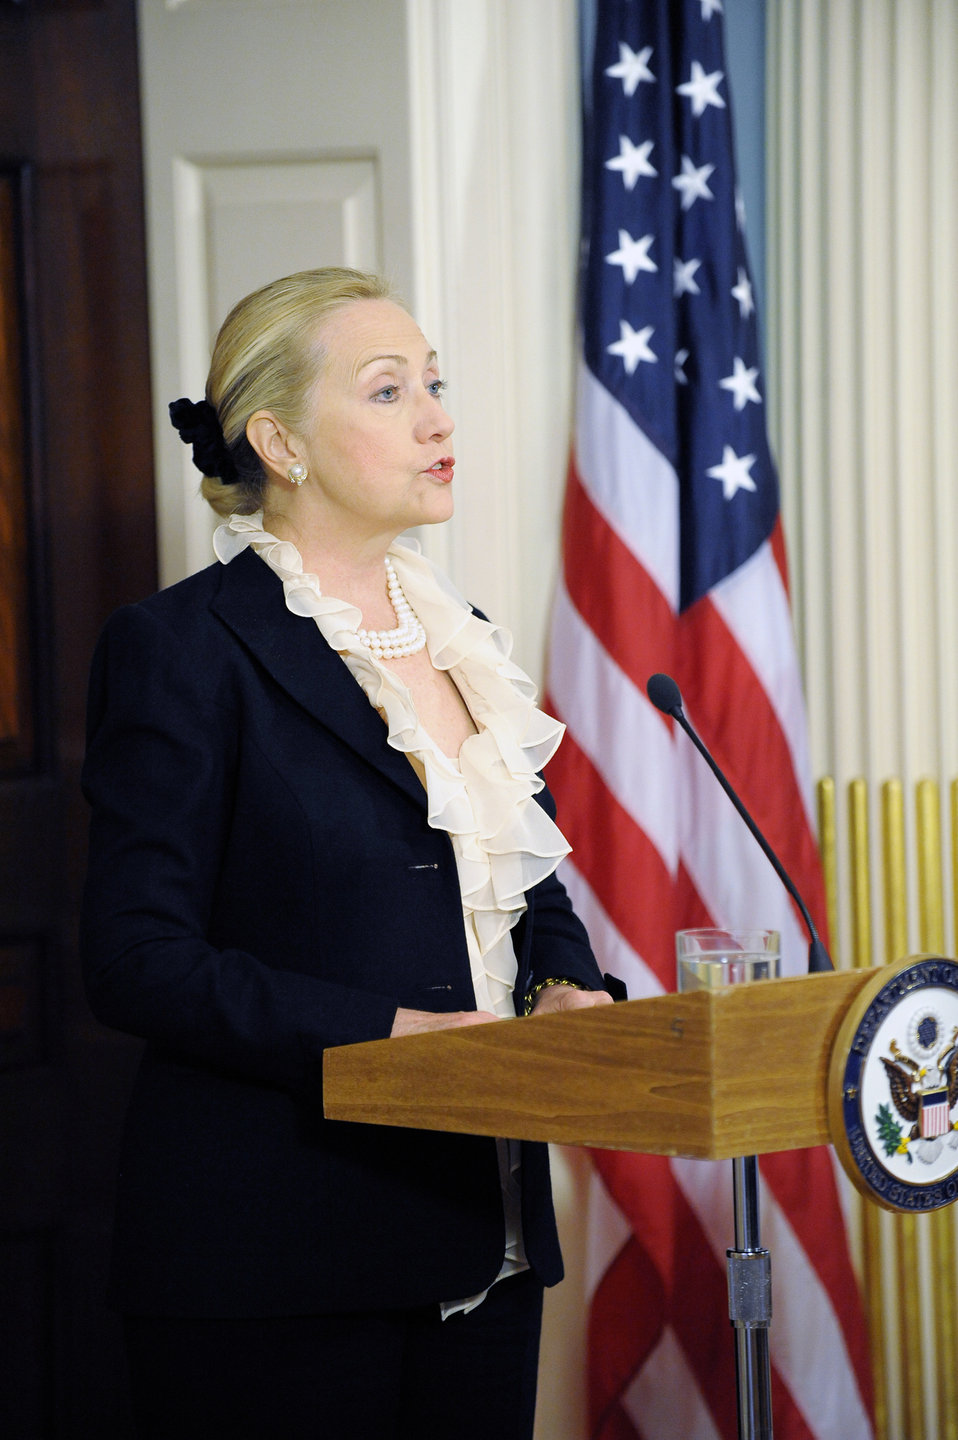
Secretary Clinton Delivers Remarks on Burma

U.S. Secretary of State Hillary Rodham Clinton delivers remarks on Burma at the U.S. Department of State in Washington, D.C., on January 13, 2012.